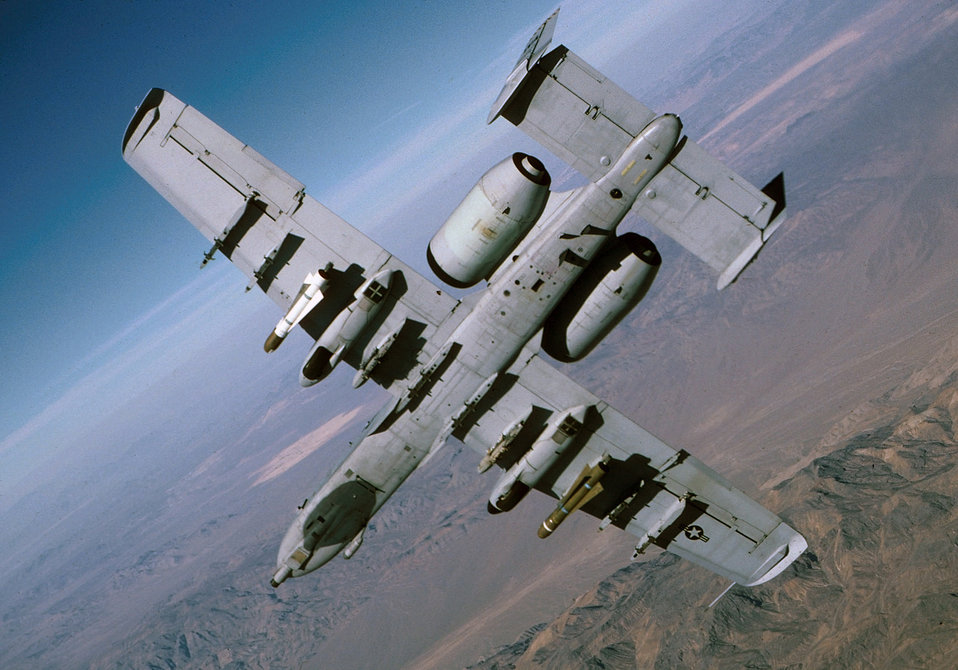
A-10 and OA-10 Thunderbolt IIs

The A-10 and OA-10 Thunderbolt IIs are the first Air Force aircraft specially designed for close air support of ground forces. They are simple, effective and survivable twin-engine jet aircraft that can be used against all ground targets, including tanks and other armored vehicles. The A-10/OA-10 have excellent maneuverability at low air speeds and altitude, and are highly accurate weapons-delivery platforms. They can loiter near battle areas for extended periods of time and operate under 1,000-foot ceilings (303.3 meters) with 1.5-mile (2.4 kilometers) visibility. Their wide combat radius and short takeoff and landing capability permit operations in and out of locations near front lines. Using night vision goggles, A-10/ OA-10 pilots can conduct their missions during darkness.